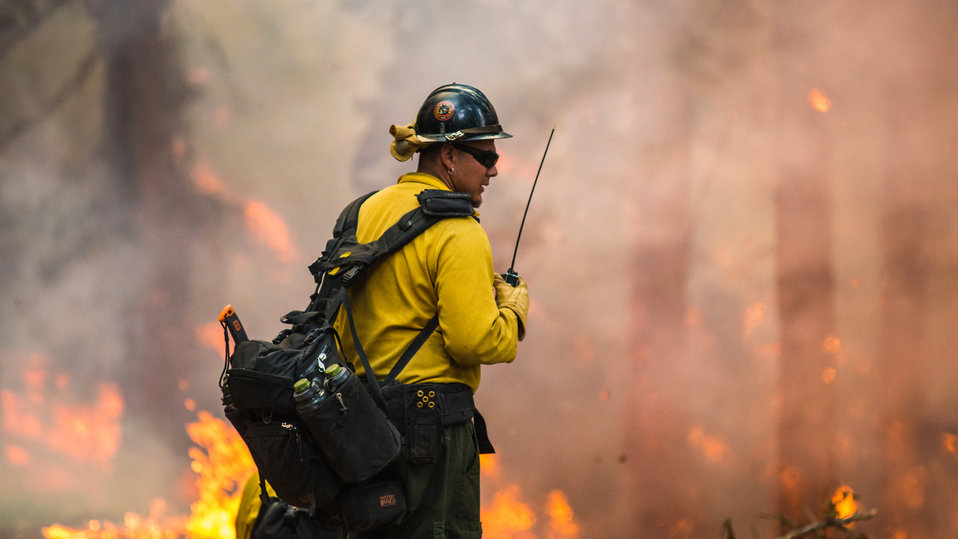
Geronimo Interagency Hotshot Crew, Department of the Interior (DOI) Indian Affairs (IA) Bureau of Indian Affairs (BIA) San Carlos Agency in Arizona; on assignment at the Big Windy Complex Wildlands Fire, approximately 15 miles west of Interstate-5 and East Northeast of Galice, Oregon, conducts a prescribed burn 'burnout' operation to help stop the main fire that may head toward this roadway, on Friday, Aug 9, 2013. The primary mission of the Interagency Hotshot Crews (IHC) is to provide a safe, organized, mobile and highly skilled hand crew for all phases of wildland fire suppression. The arduous duties and specialized assignments required of IHC personnel require uniform staffing, certification, training, equipment, communications, transportation, organization, and qualifications that adhere to interagency standards and guidelines.